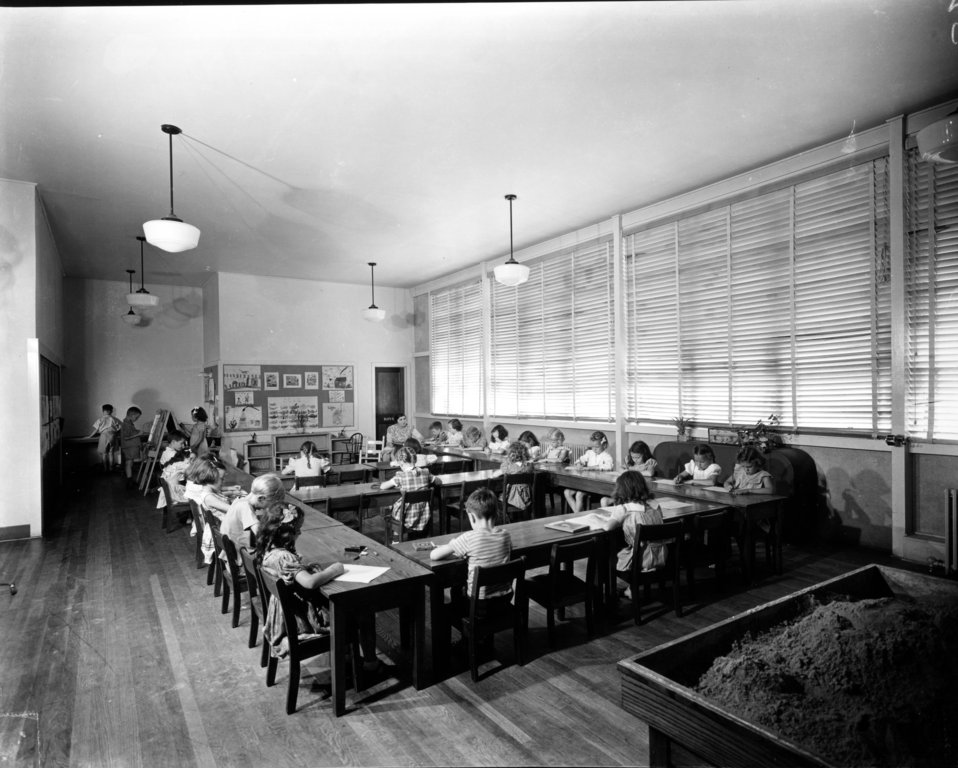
Schools at Oak Ridge